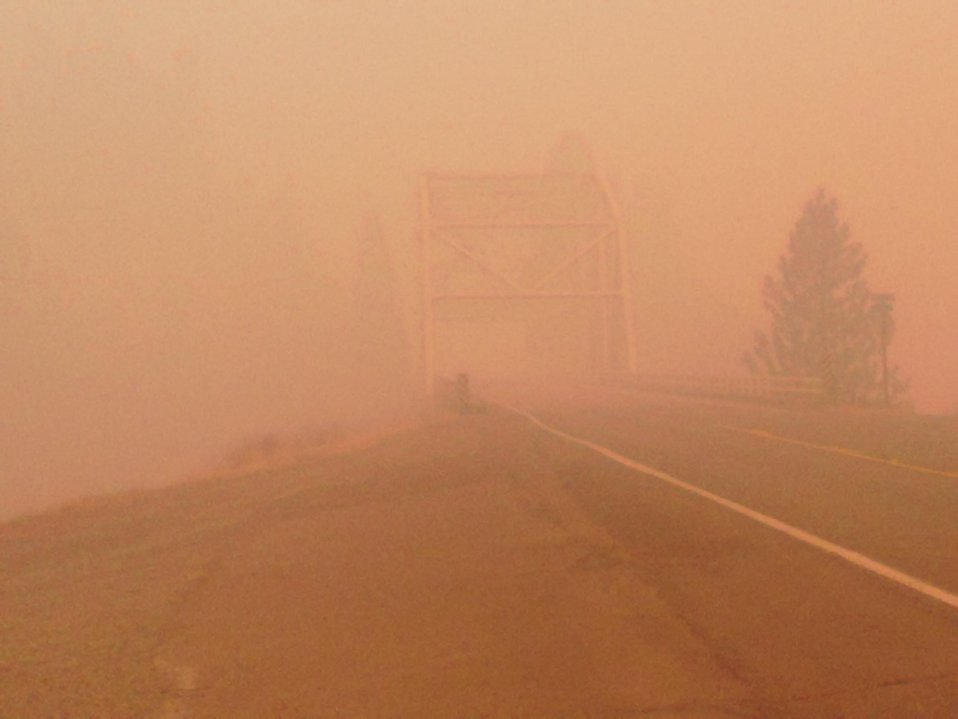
Smoke from the Big Windy Complex Fires hides the Hellgate Bridge that spans the Rogue River near Grants Pass, OR. The Big Windy Complex Fires consists of three fires: The Big Windy Fire, Calvert Peak Fire, and Jenny Fire (formerly the Windy 16 Fire) near Grants Pass, OR. The fires began on Jul. 26, 2013 by lighting have consumed approximately 7, 499 acres.